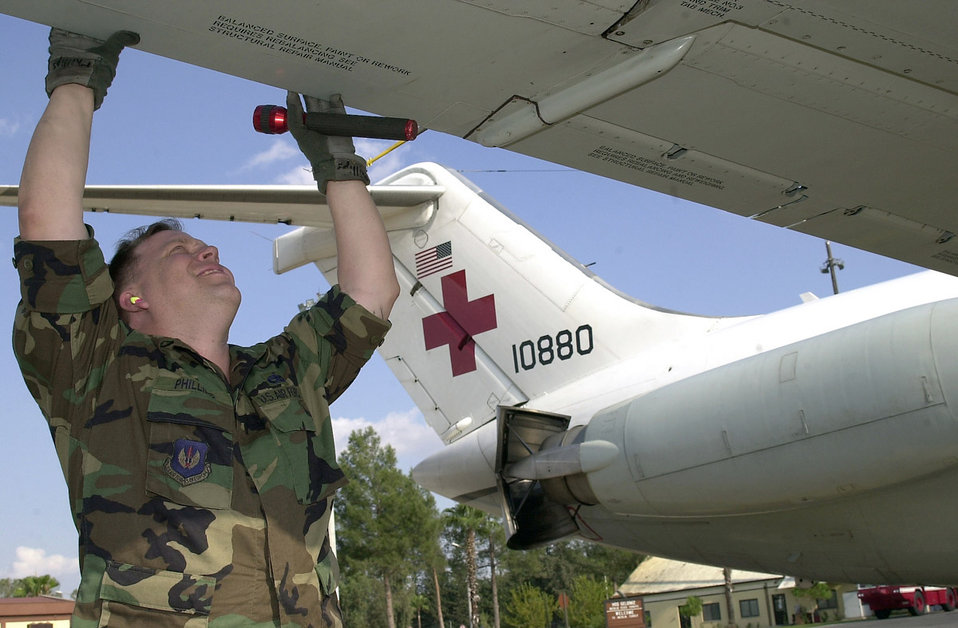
Mr. Fix It

INCIRLIK AIR BASE, Turkey -- After a long duty day filled with stops at numerous bases, Staff Sgt. Tim Phillips, a dedicated flying crew chief assigned to the 75th Airlift Squadron from Ramstein Air Base, Germany, performs post flight aircraft checks after landing here. Phillips examines the wing of a C-9 Nightingale and assures its safe condition for the next day. He is part of an aircrew dedicated to flying a medical team throughout Europe to pick up, treat and deliver patients to the regional medical center in Landstuhl, Germany for major medical care.